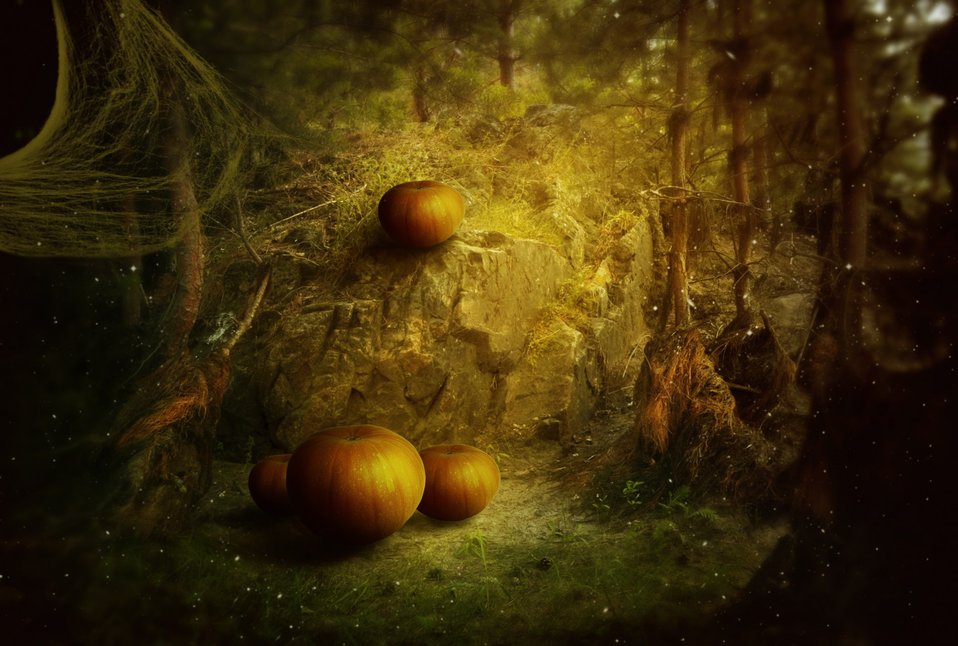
Happy halloween

Scary background with pumpkins.